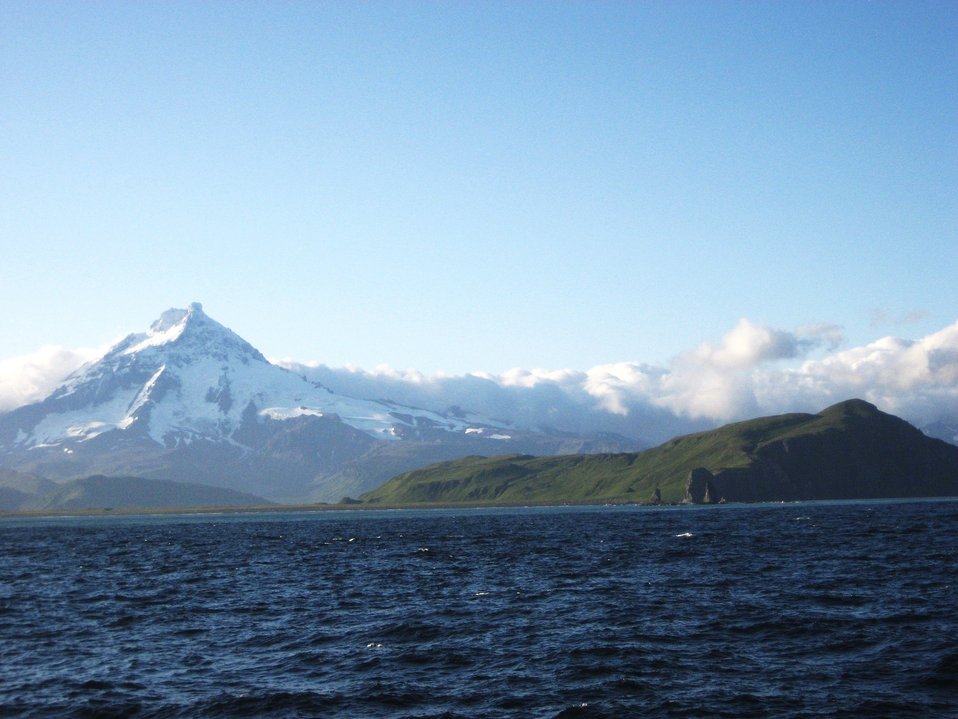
Isanotski Volcano